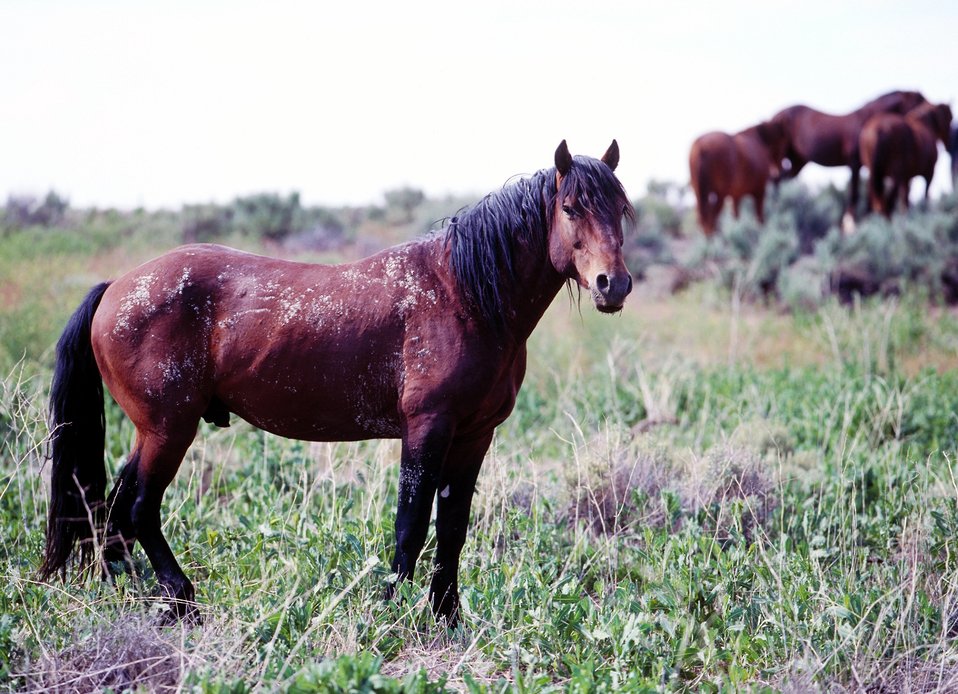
Onaqui Herd near Dugway, Utah.